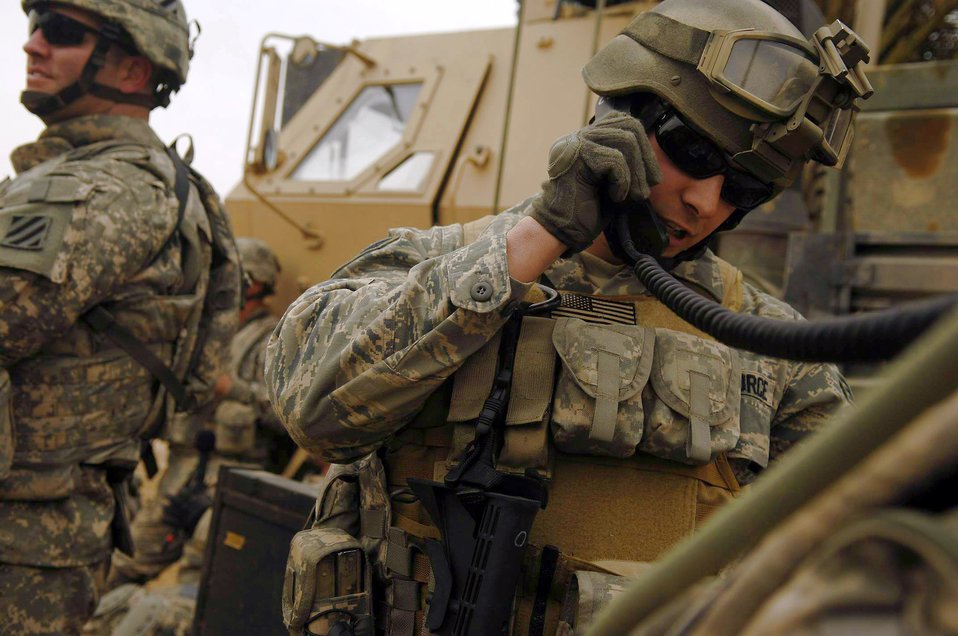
B-1B destroys al-Qaida torture compound in Iraq

Senior Airman Joseph Aton clears a B-1B Lancer to drop six 500-pound guided bomb unit-38s onto an al-Qaida torture house and prison March 10 in northern Zambraniyah, Iraq. Airman Aton is a joint terminal attack controller from Fort Hood, Texas, and is deployed with the 2nd Brigade Combat Team, 3rd Infantry Division.